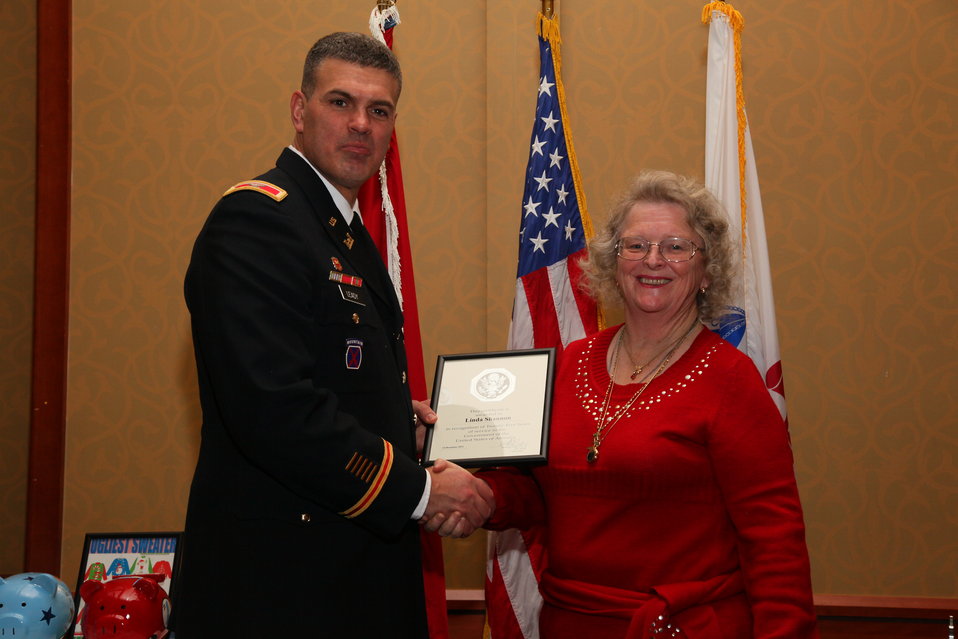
Sacramento District Holiday Party 2011